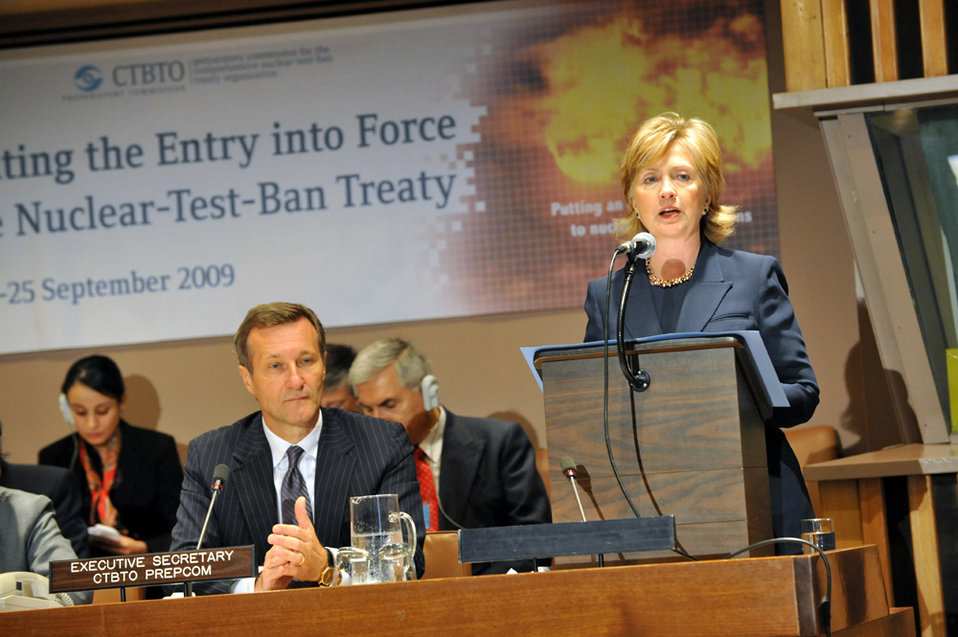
UNGA 2009: Comprehensive Nuclear-Test-Ban Treaty Conference

U.S. Secretary of State Hillary Rodham Clinton delivers remarks at the Comprehensive Nuclear-Test-Ban Treaty (CTBT) Article XIV Conference at the United Nations headquarters during the 64th Session of the UN General Assembly in New York City, New York September 24, 2009.